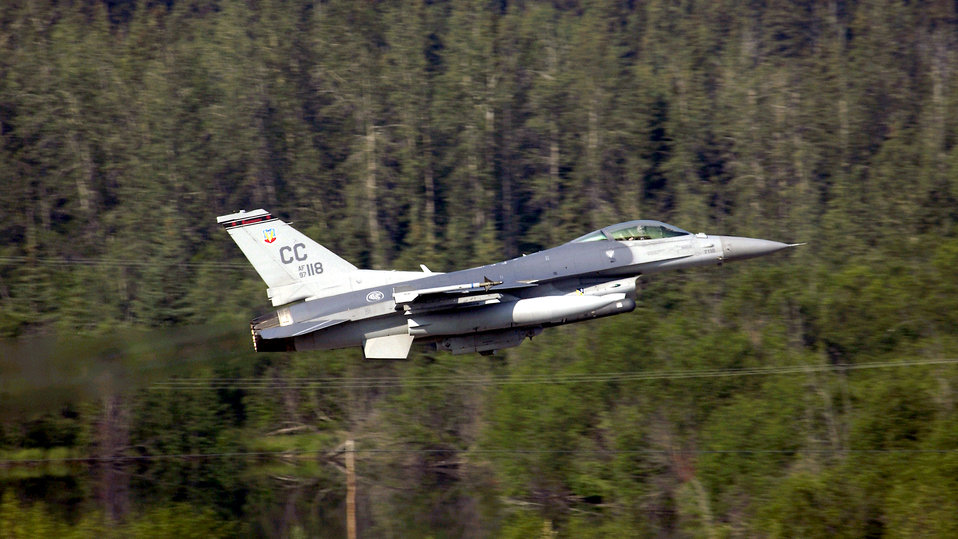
Coping with thunder

EIELSON AIR FORCE BASE, Alaska -- An F-16C Fighting Falcon from the 428th Fighter Squadron at Cannon Air Force Base, N.M., takes off for a training mission during exercise cooperative cope thunder here July 19. Cope thunder is the largest multilateral air combat training exercise in the Pacific and simulates the wartime conditions pilots would face in combat.